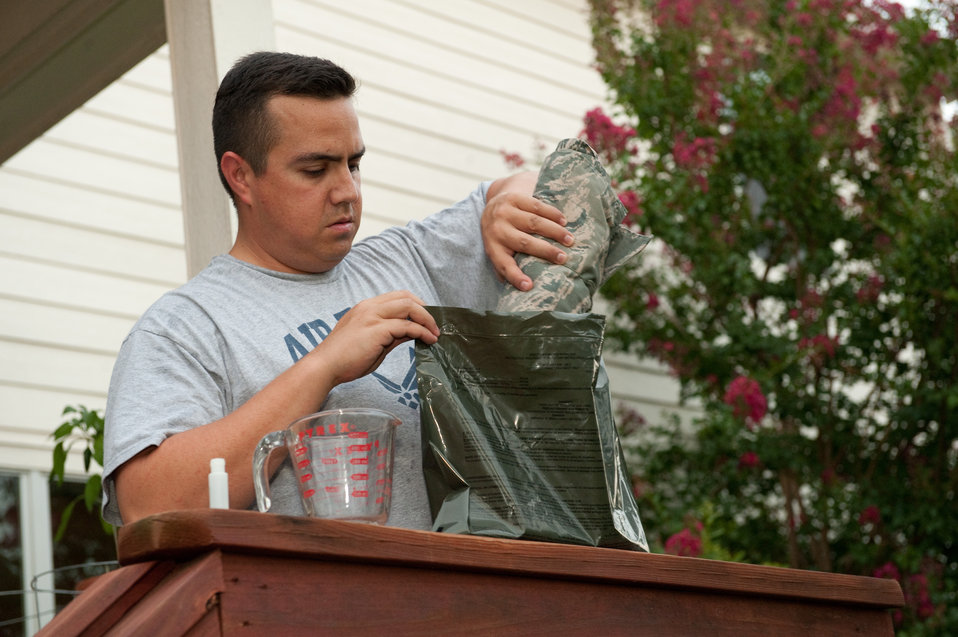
Blogging Couple Deployment preperation

Master Sgt. Rudy Gamez slips a rolled uniform blouse into a bag with an emulsion of permethrin insect repellent and water at his home in San Antonio, Texas, on July 13, 2010. After a three hour soak, the clothes will provide some insect protection for many washings. He is preparing for Combat Skills Training and his sixth deployment to Southwest Asia. Later this year he and his wife Tech. Sgt Christina Gamez will both be deployed and blogging about their experiences.